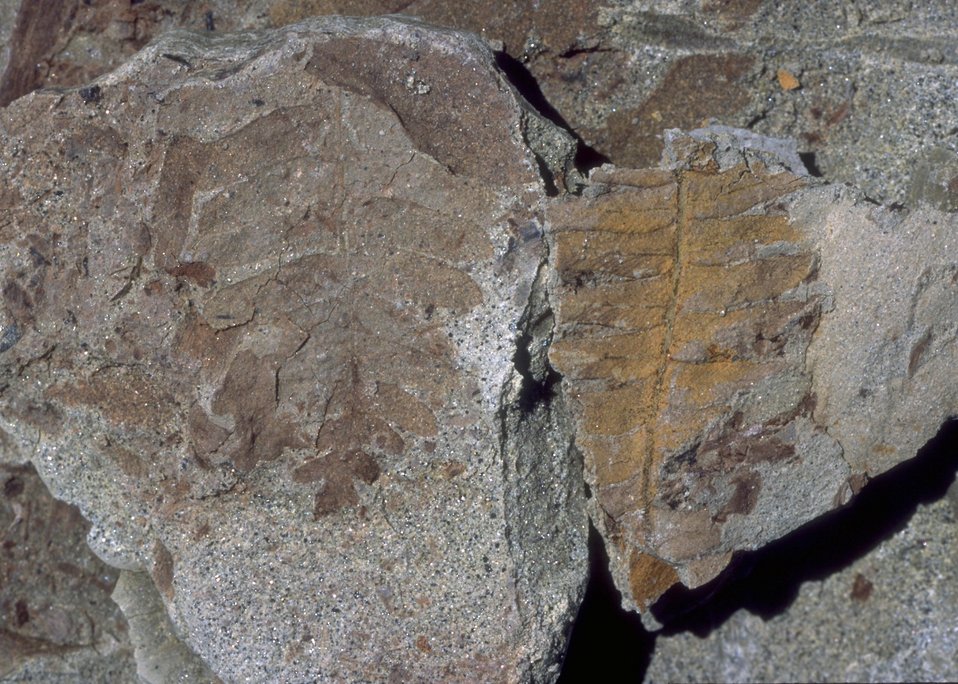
Close up of fossil vegetation, Cedar Ridge Paleo area, Worland Field Office.